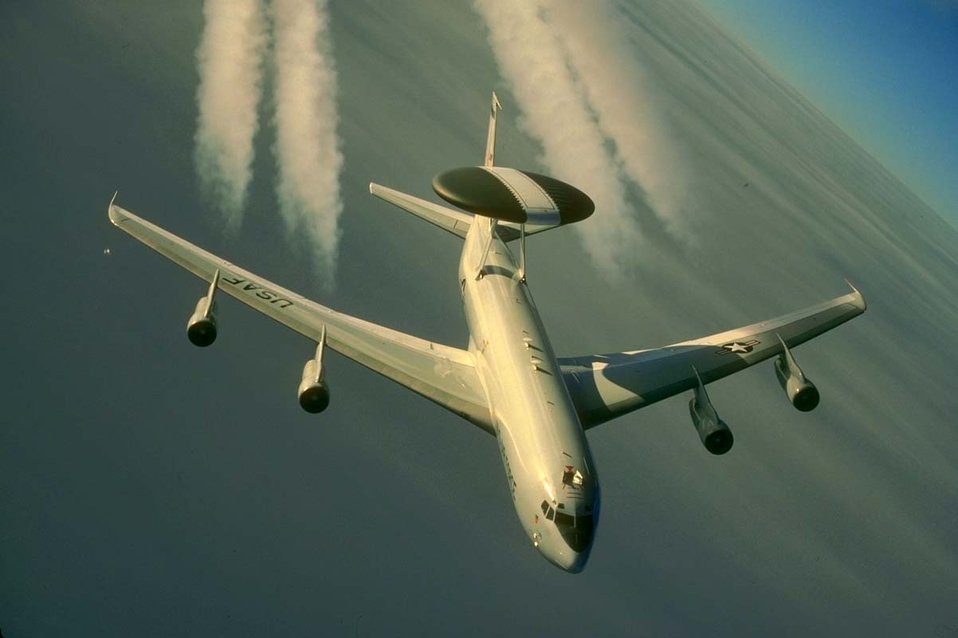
Sentry

The E-3 Sentry is a modified Boeing 707/320 commercial airframe with a rotating radar dome. The dome is 30 feet in diameter, 6 feet thick and is held 11 feet above the fuselage by two struts. It contains a radar subsystem that permits surveillance from the Earth's surface up into the stratosphere, over land or water. The radar has a range of more than 200 miles for low-flying targets and farther for aerospace vehicles flying at medium to high altitudes.